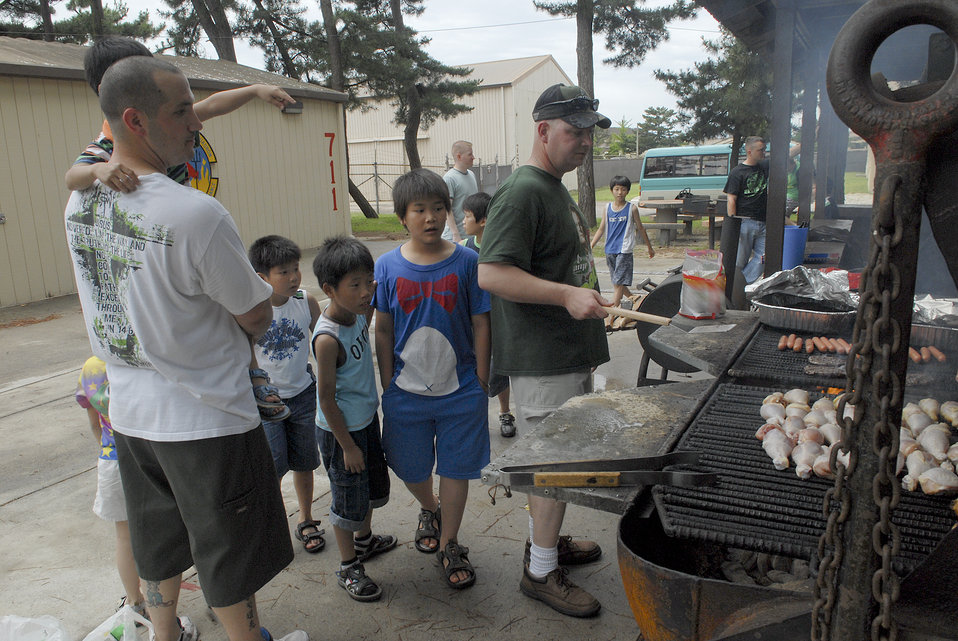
Kunsan Kid's Day

Children from the Il Mag Won Orphanage watch as volunteers prepare hot dogs, hamburgers and chicken legs during a kid's day July 24, 2010, at Kunsan Air Base, South Korea.